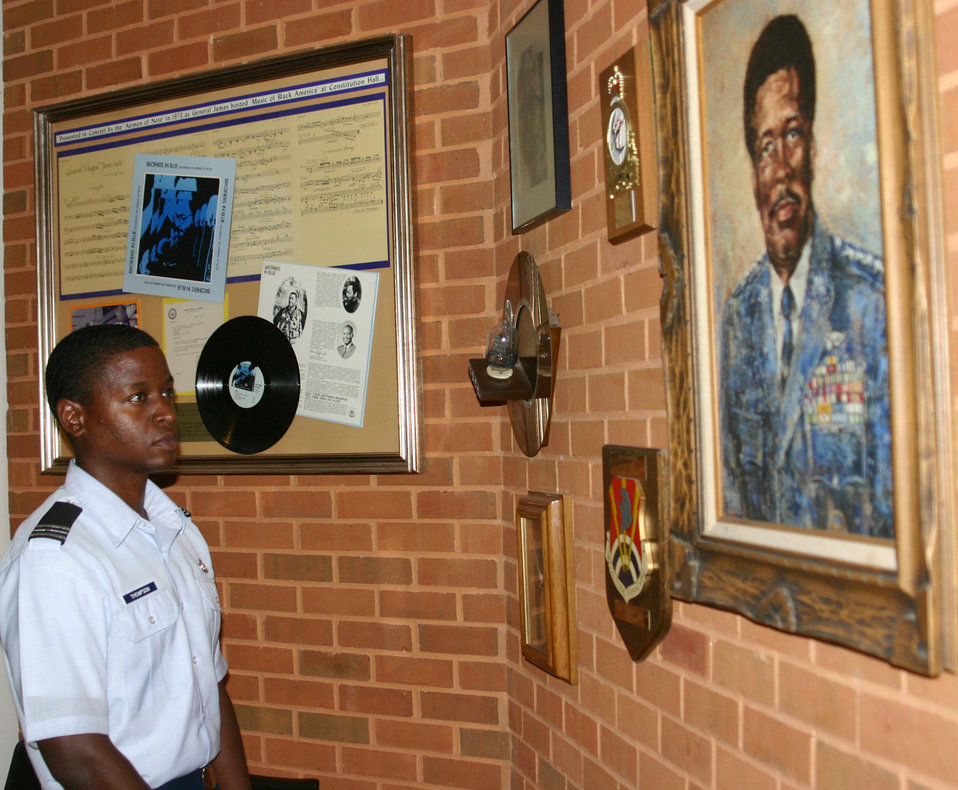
OTS incorporates Tuskegee Airmen into new curriculum

Officer Trainee Gerry Thompson, a former technical sergeant, looks at various historic artifacts displayed at the Tuskegee University commemorating the achievements of the Air Force's first black four-star general, Gen. Daniel